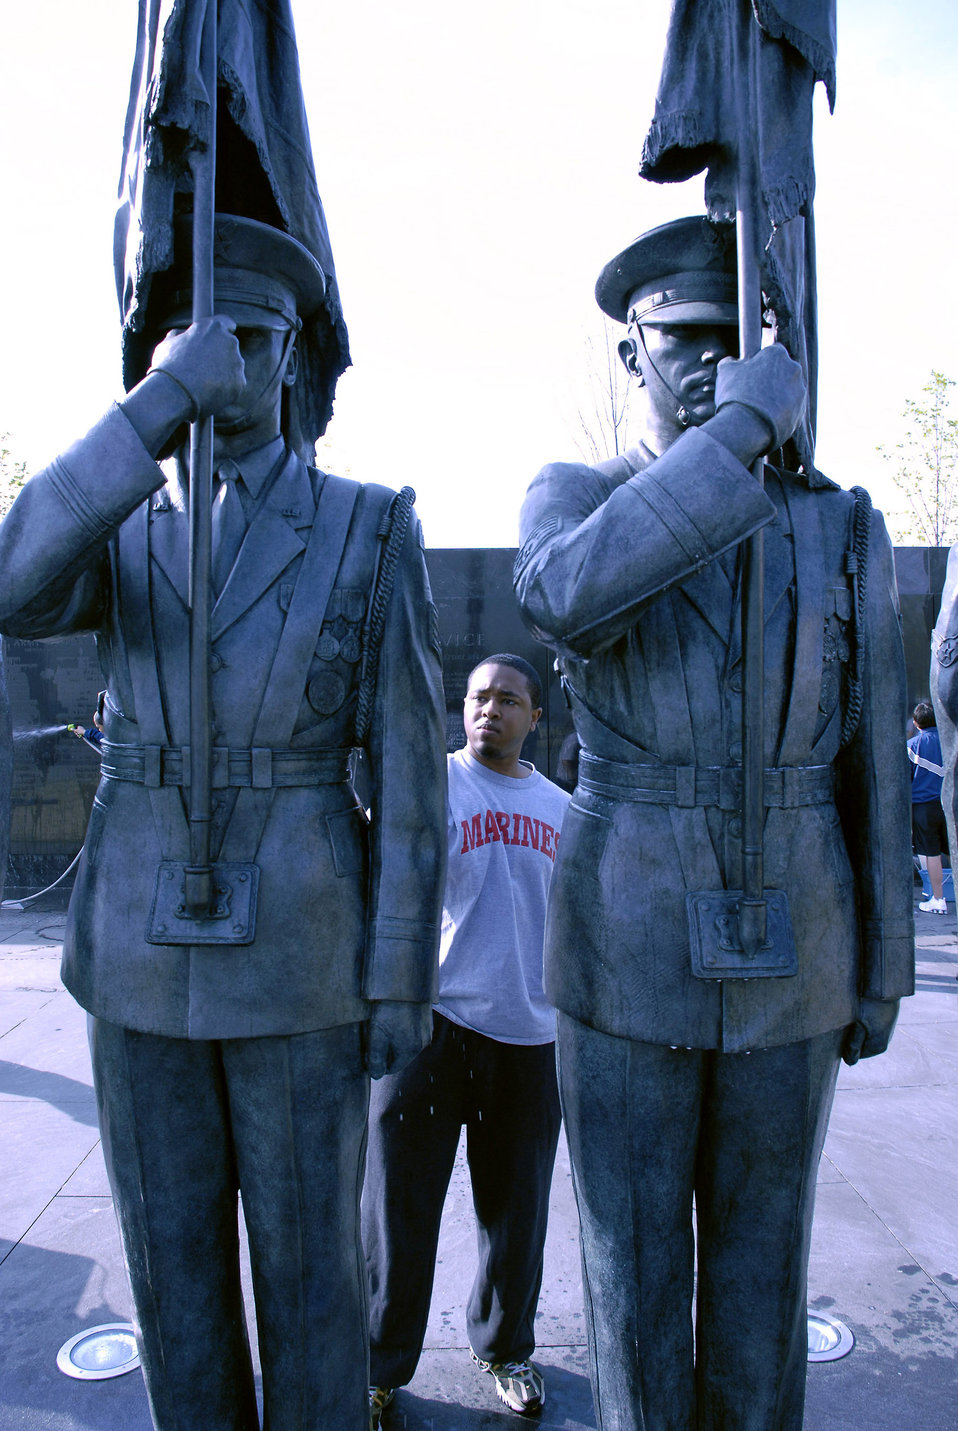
Sprucing up the Air Force Memorial

U.S. Marine Corps Reserve Cpl. Chris Still cleans a bronze honor guard statue during a work party April 19 at the Air Force Memorial. Corporal Still was invited by Tech. Sgt. Terisa Pennington to join her and more than 50 volunteers from Air Force Sergeants Association Chapter 300 in Washington D.C. to help spruce up the site. Dedicated on Oct., 14, 2006, the memorial honors the service and sacrifice of the men and women of the United States Air Force and its predecessor organizations. The wall bears the inscriptions of combat campaigns and expeditionary operations and contains the words of Air Force leaders that relate to the service's core values of Integrity First, Service Before Self and Excellence in All We Do. The memorial is located just outside the nation's capital in Arlington, Va., adjacent to Arlington National Cemetery and overlooking the Pentagon.